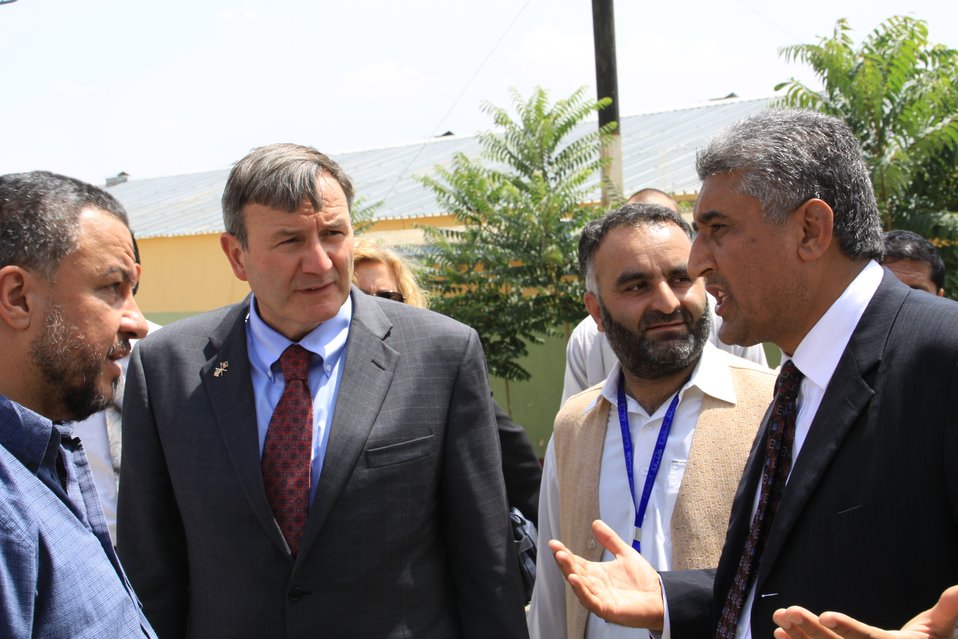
Badam Bagh Farm